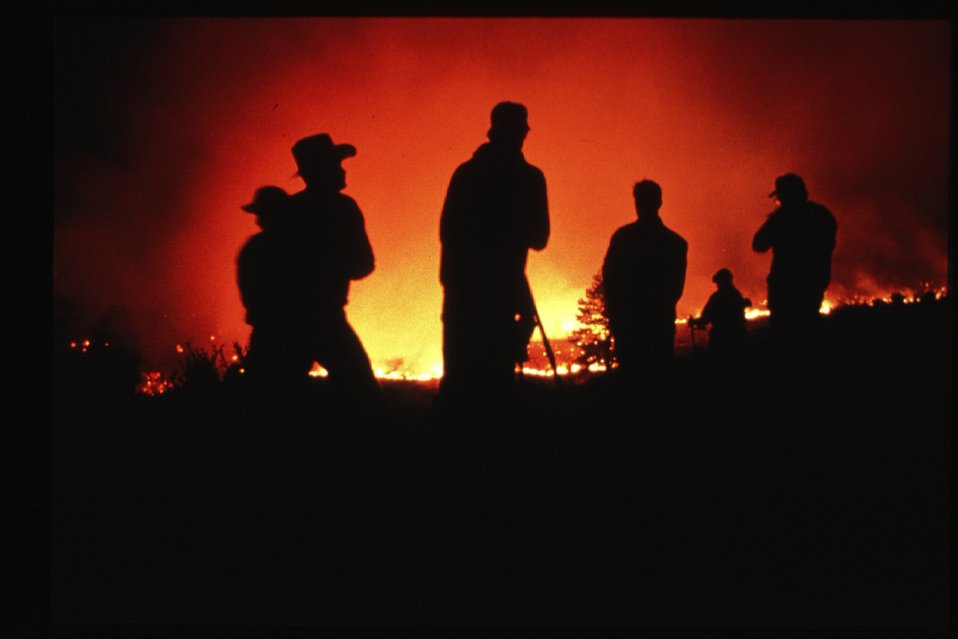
Boise Foothills Fire Danskin Mountains and South Fork of Boise River Wild Fire Fighters Four River Field Office LSRD Lower Snake River District